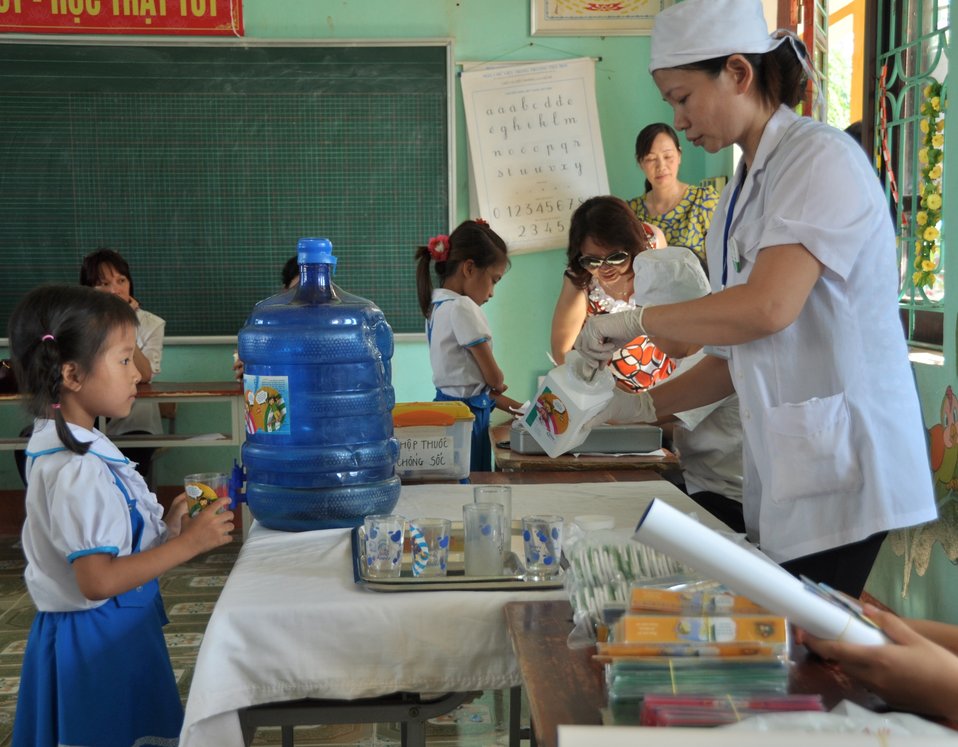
USAID supports deworming education and medication distribution in Bac Giang Province

May 20, 2013